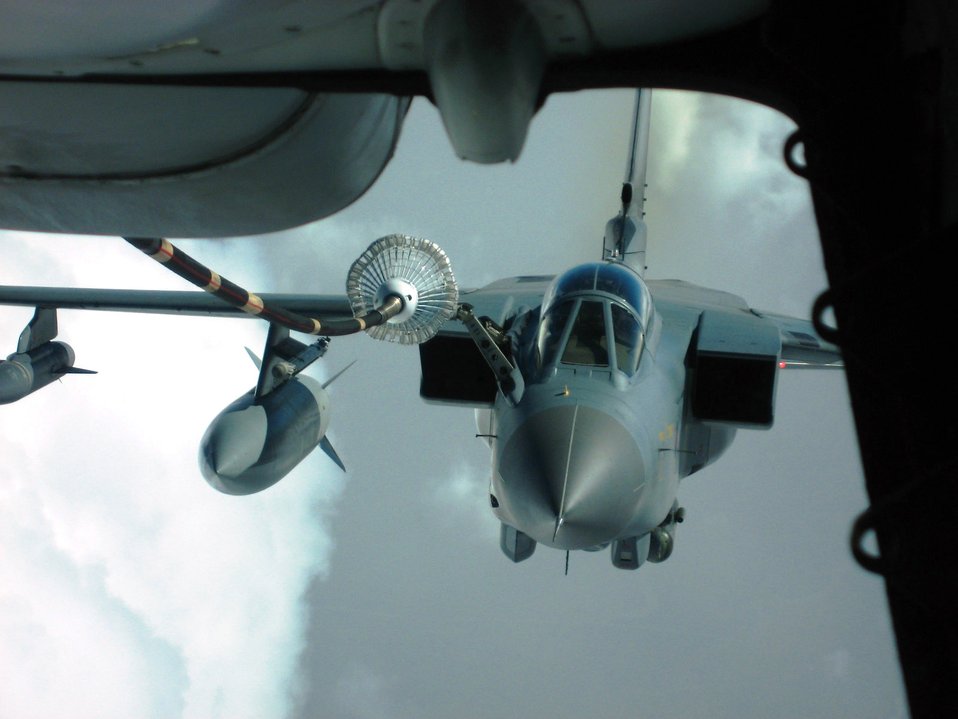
Fuel for the fight

A Royal Air Force Tornado bomber/fighter aircraft prepares to connect with the trailing drogue of a KC-10 Extender over Iraq Nov. 5. The KC-10 is assigned to the 380th Air Expeditionary Wing, the largest air refueling unit in Southwest Asia, using KC-10s and KC-135 Stratotankers to fuel U.S. and allied aircraft.